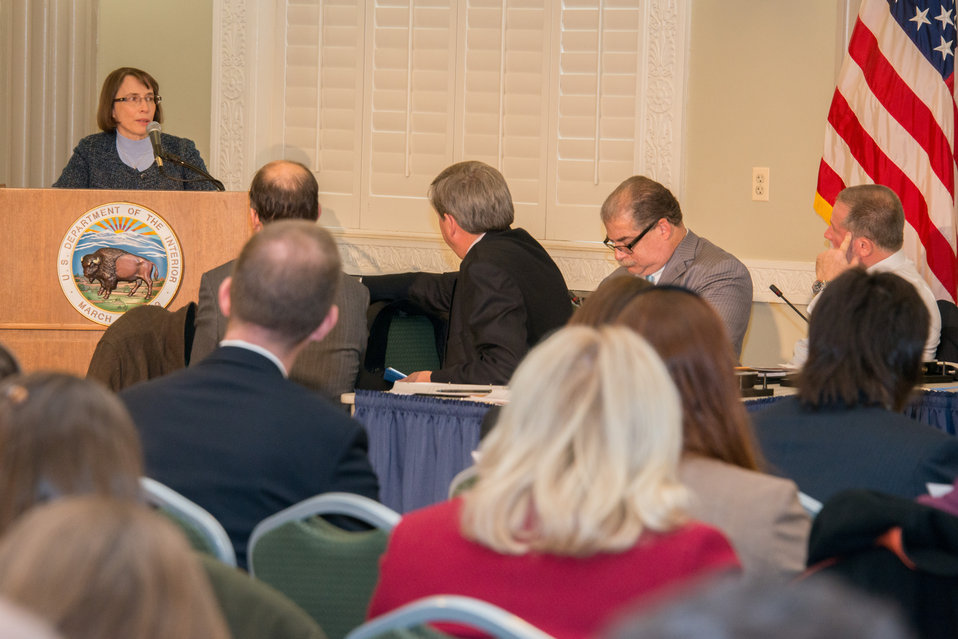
Public Meeting of Advisory Council on Wildlife Trafficking

Ambassador Judith Garber, Principal Deputy Assistant Secretary of the Bureau of Oceans and International Environmental and Scientific Affairs at the Department of State, speaks to the Advisory Council on Wildlife Trafficking and attendees to the public meeting